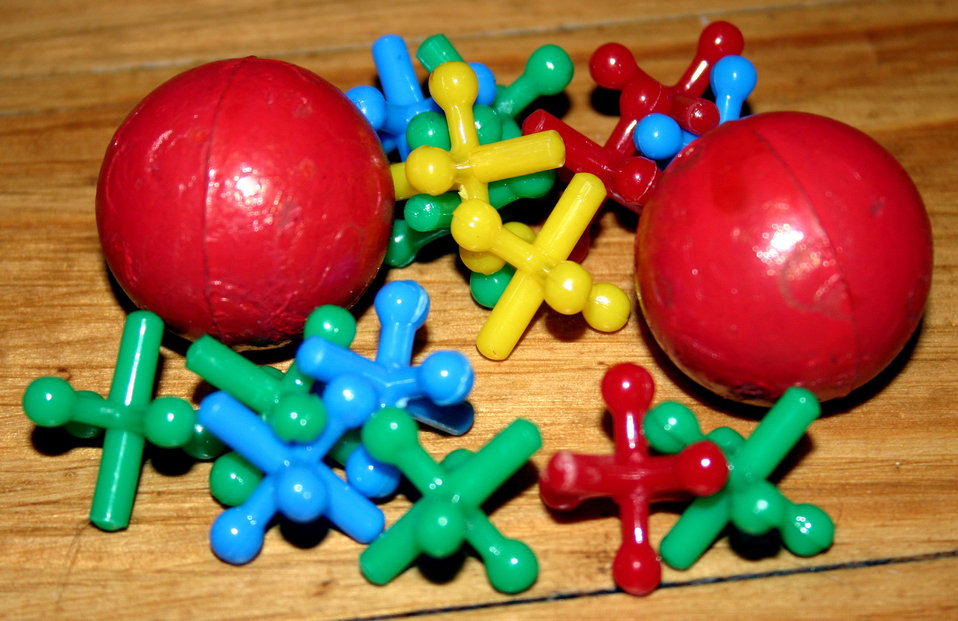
Jacks